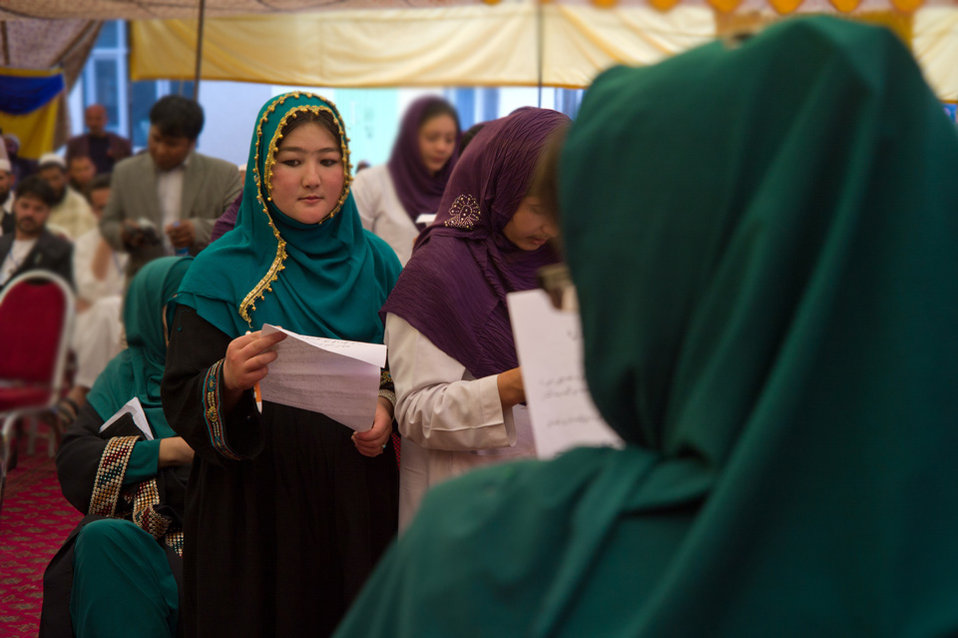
Taking the Midwife's Oath